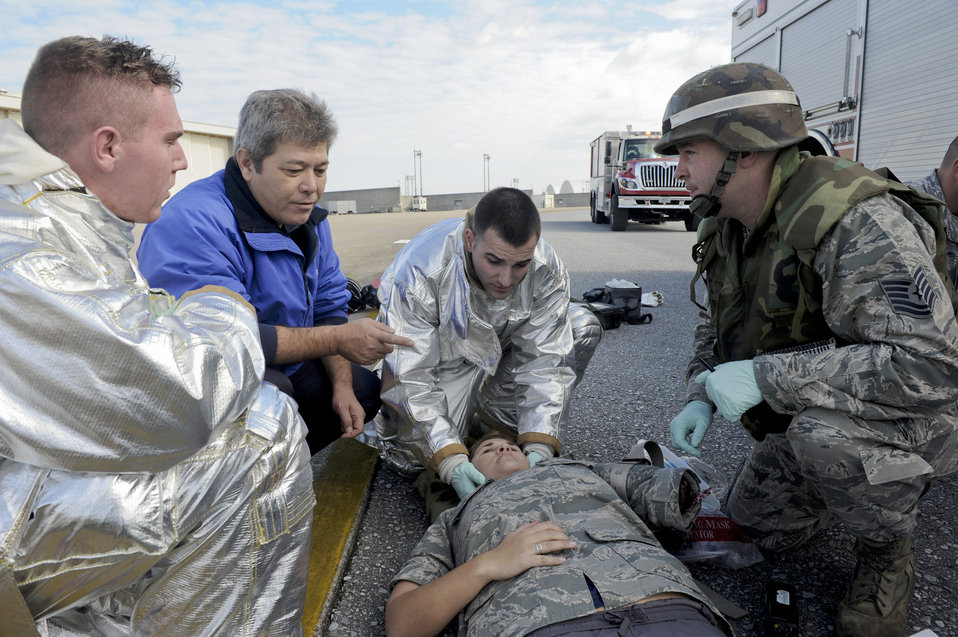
Kadena exercise

Firefighters from the 18th Civil Engineer Squadron treat a simulated victim from a simulated E-3 Sentry engine fire Jan. 19, 2011, at Kadena Air Base, Japan. The simulated engine fire was part of Beverly High 11-02, a Local Operational Readiness Exercise, and tested the firefighters' ability to respond to an aircraft fire.